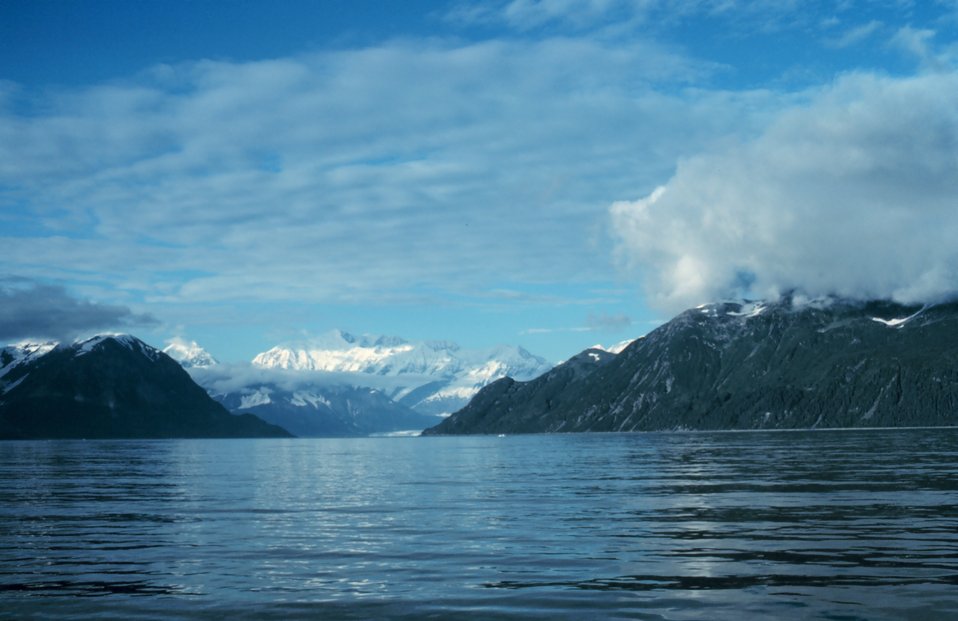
Icy Bay area